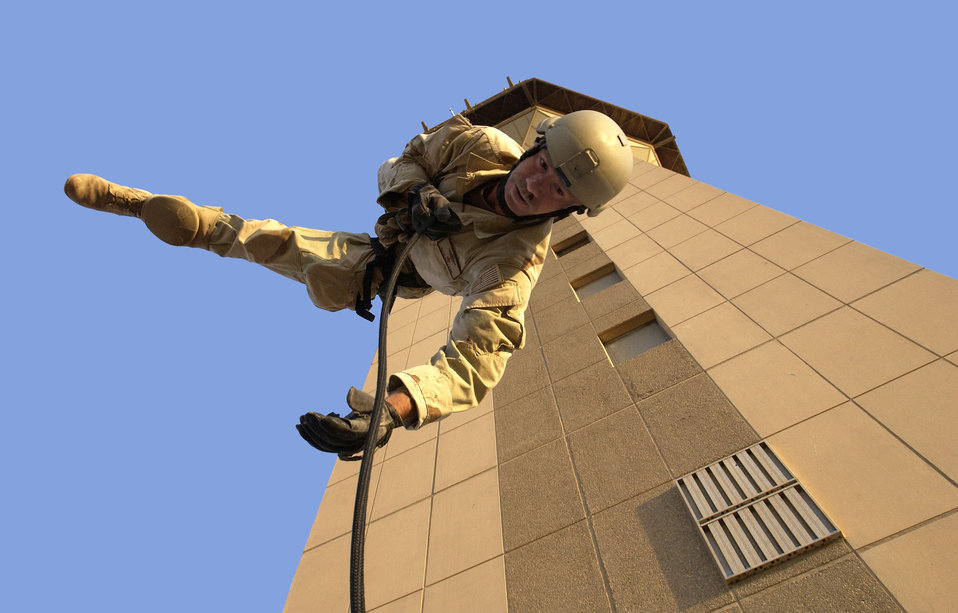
On my way down... now!

OPERATION IRAQI FREEDOM -- Senior Master Sgt. Matt Ramp performs a rappelling exercise from the Baghdad International Airport air traffic control tower. Ramp is an Air Force Reserve pararescueman assigned to the 304th Rescue Squadron, Portland International Airport. Squadron members are deployed to Baghdad International Airport supporting Operation Iraqi Freedom.